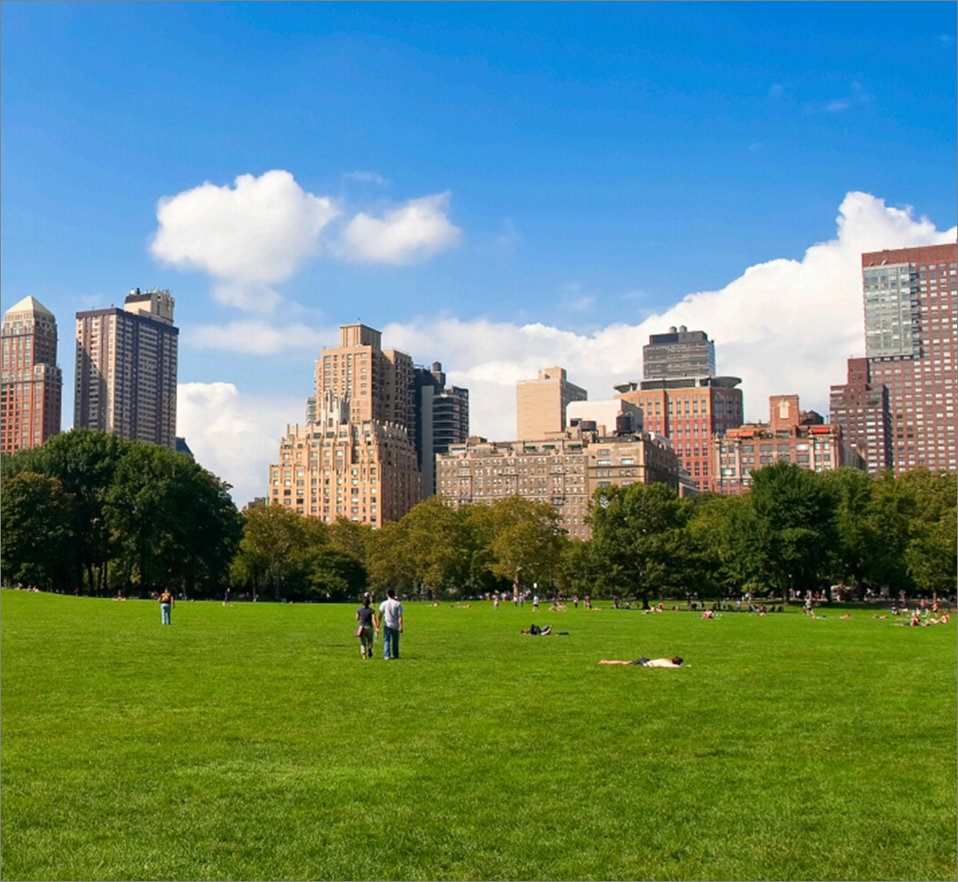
Battle of the Buildings - EPA's Energy Star National Building Competition

On August 20, EPA will officially launch its 2013 ENERGY STAR National Building Competition: Battle of the Buildings.